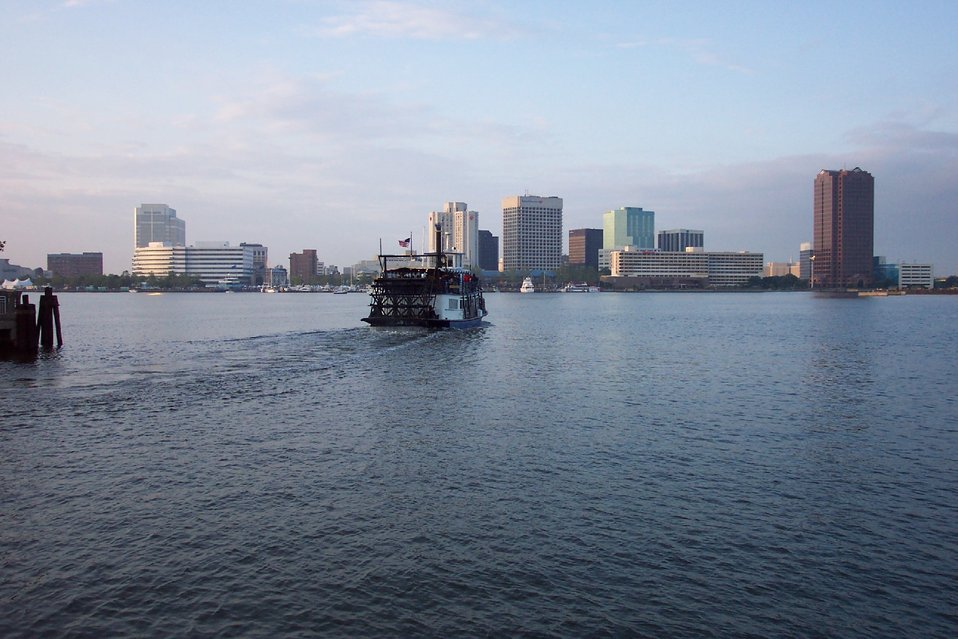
Norfolk skyline as seen from Portsmouth.